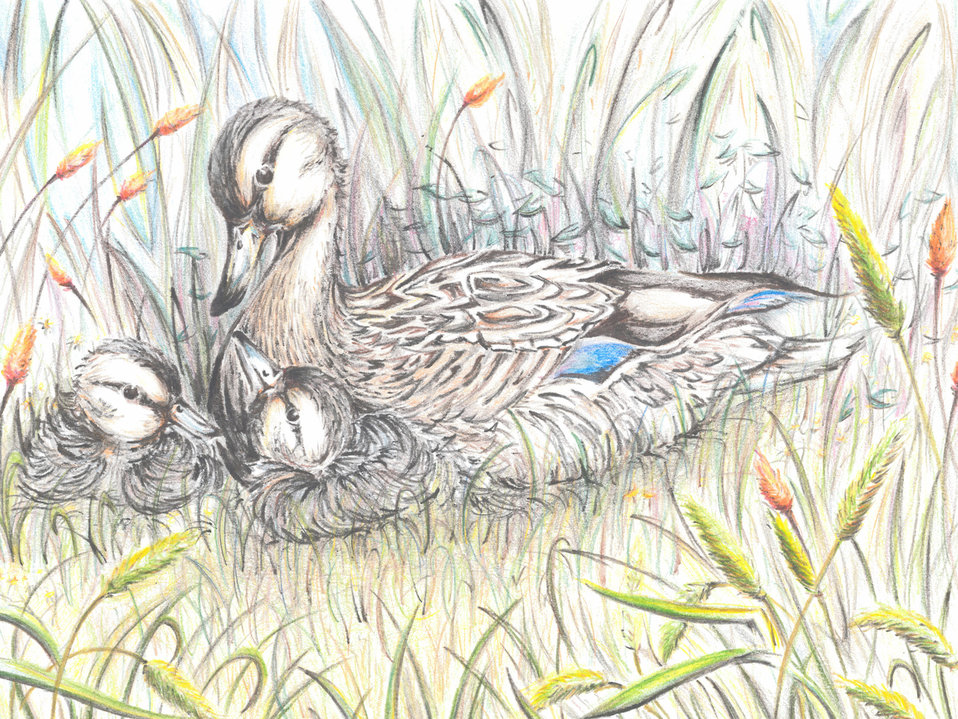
Hawaii

2012 Jr Duck Stamp Program
State Best of Show
Hawaii